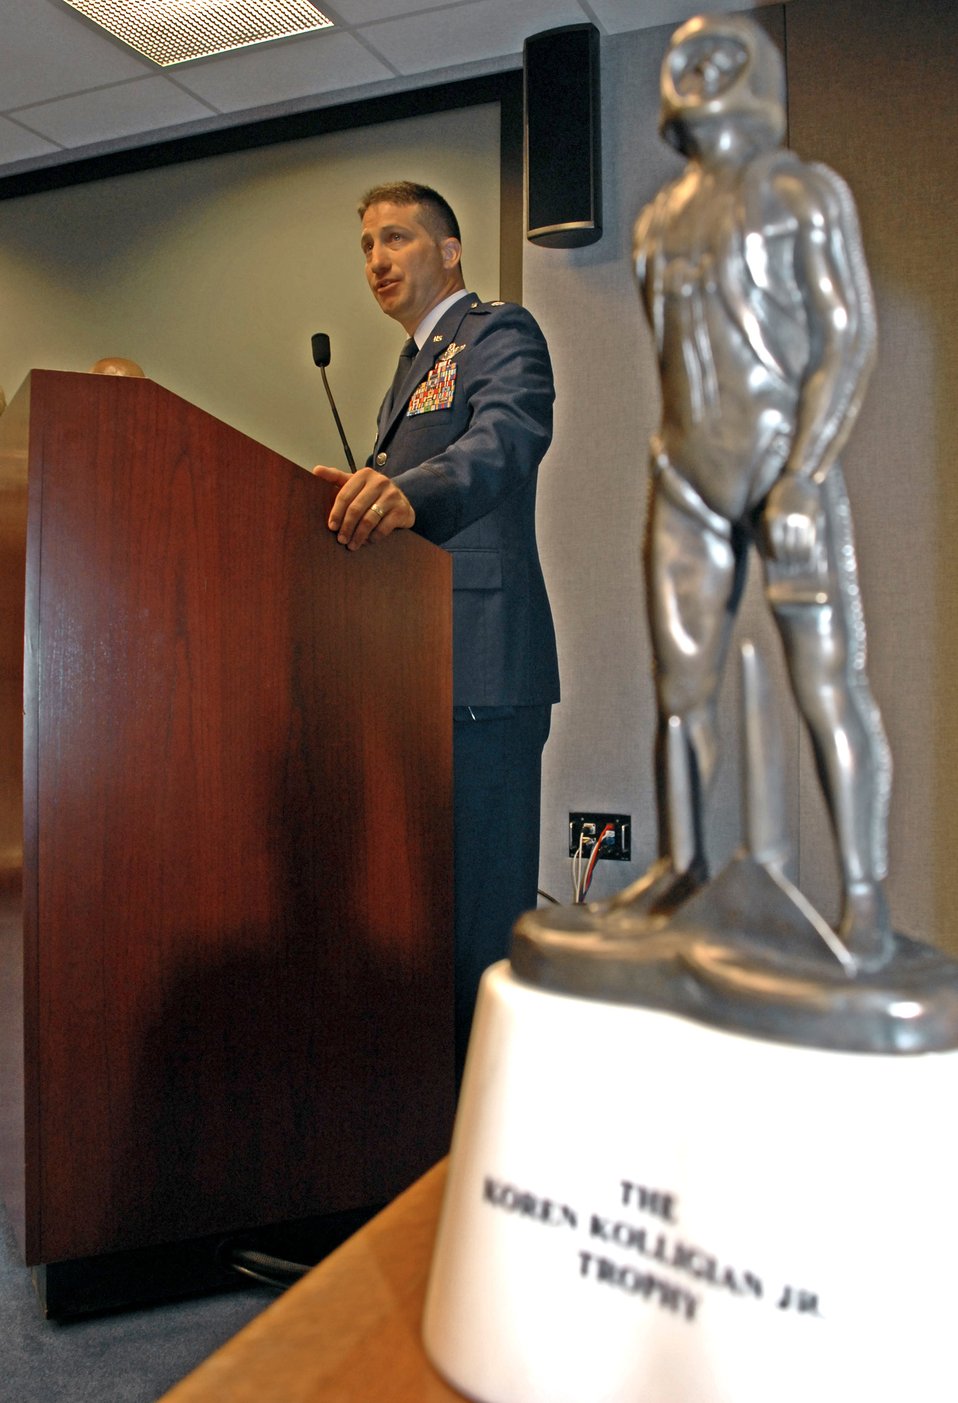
Pave Low pilot named Kolligian Award recipient

Lt. Col. Eugene V. Becker speaks to a crowd during a ceremony at the Pentagon, where he was presented the Koren Kolligian Jr. trophy June 9. Colonel Becker, assigned to the 20th Special Operations Squadron at Hurlburt Field, Fla., was flying an MH-53M Pave Low helicopter on a training mission when it suffered a catastrophic mechanical failure. Colonel Becker, with the help of his crew, was able to land the helicopter safely, saving the lives of all aboard.